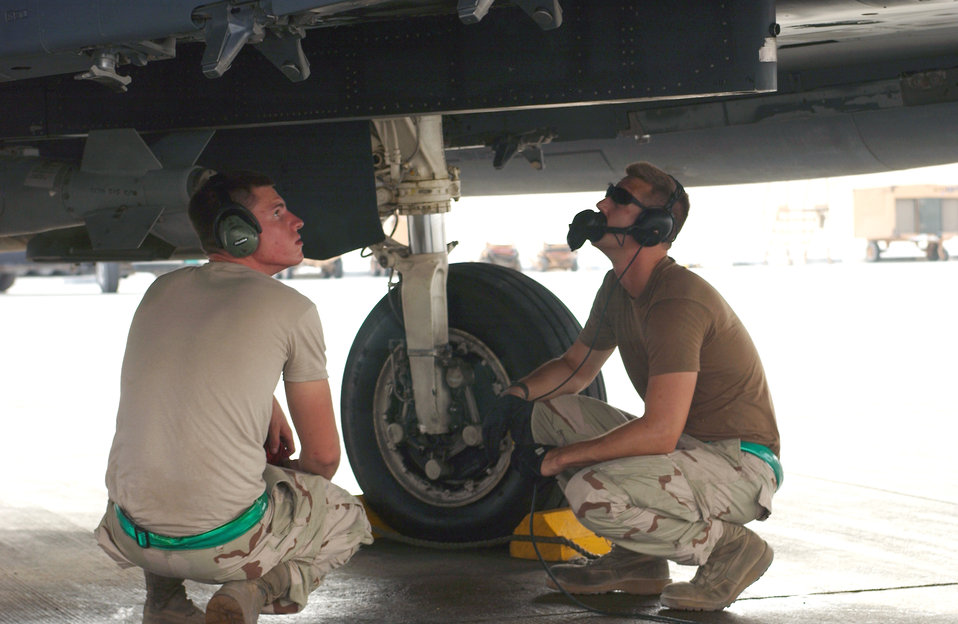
Combat mission

Senior Airmen Harlen Magnie and Wesley Hansard inspect their F-15E Strike Eagle during an engine-running preflight before a combat mission from a forward operating base in Southwest Asia Aug. 18. The Airmen are assistant crew chiefs deployed to the 379th Expeditionary Aircraft Maintenance Squadron from Seymour Johnson Air Force Base, N.C.